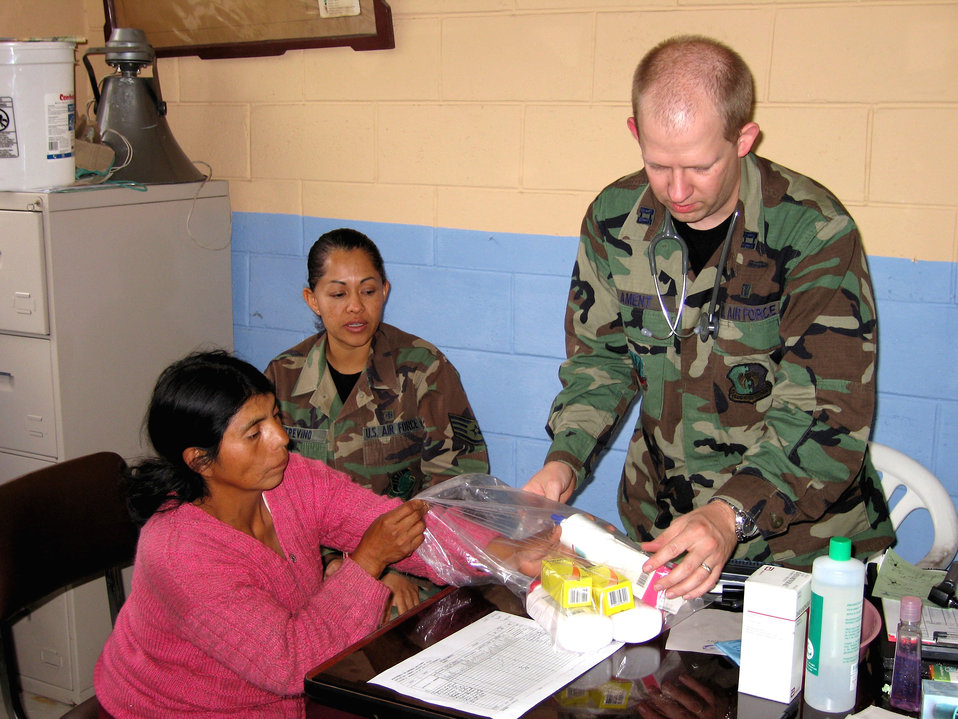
Airmen assist with volcano disaster relief

Capt. (Dr.) Aaron Ament (right) and Staff Sgt. Leticia Trevino provide medication to a patient in Pinepe, Ecuador, for symptoms caused by the Tungurahua volcano eruption Aug. 16. Captain Ament is a family practice physician from Minot Air Force Base, N.D. Sergeant Trevino is a translator and lab technician from Lackland AFB, Texas.